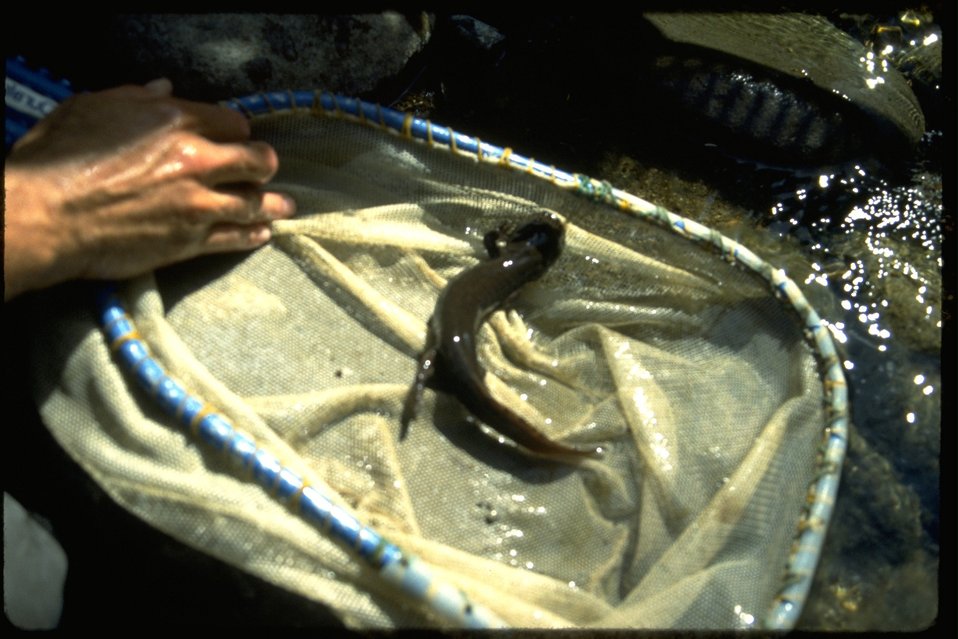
Giant salamander in net.